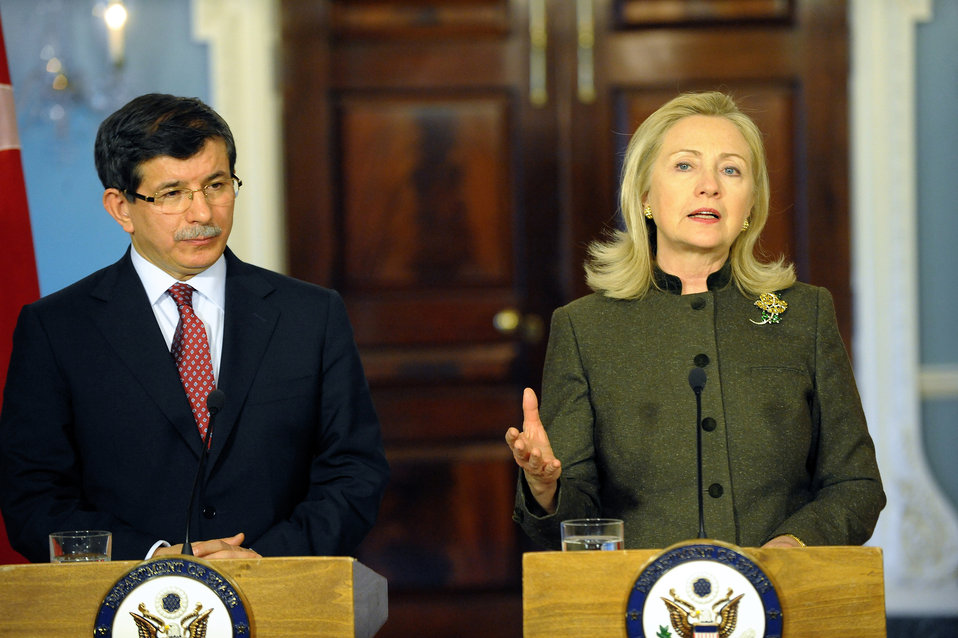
Secretary Clinton Meets With Foreign Minister Davutoglu of Turkey

U.S. Secretary of State Hillary Rodham Clinton meets with Turkish Foreign Minister Ahmet Davutoglu at the U.S. Department of State in Washington, D.C., on February 13, 2012.